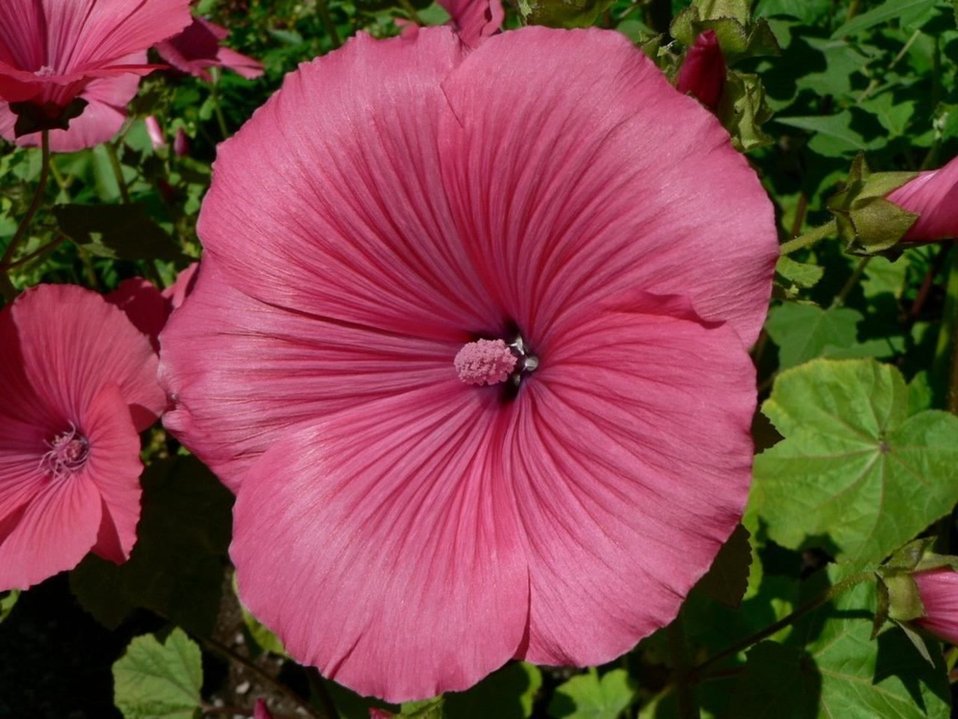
English:
Image title: Large beautiful flower Image from Public domain images website, http://www.public-domain-image.com/full-image/flora-plants-public-domain-images-pictures/flowers-public-domain-images-pictures/large-beautiful-flower.jpg.html